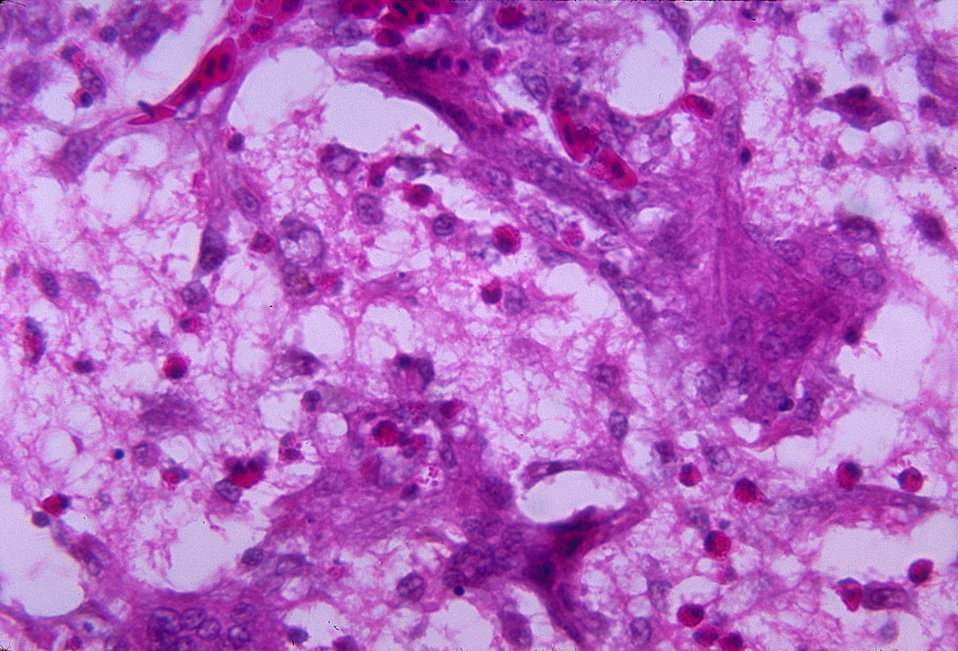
These encephalitic changes found in a 2 week old chicken brain were due to the fungal organism Ochroconis gallopavum, formerly Dactylaria gallopava.